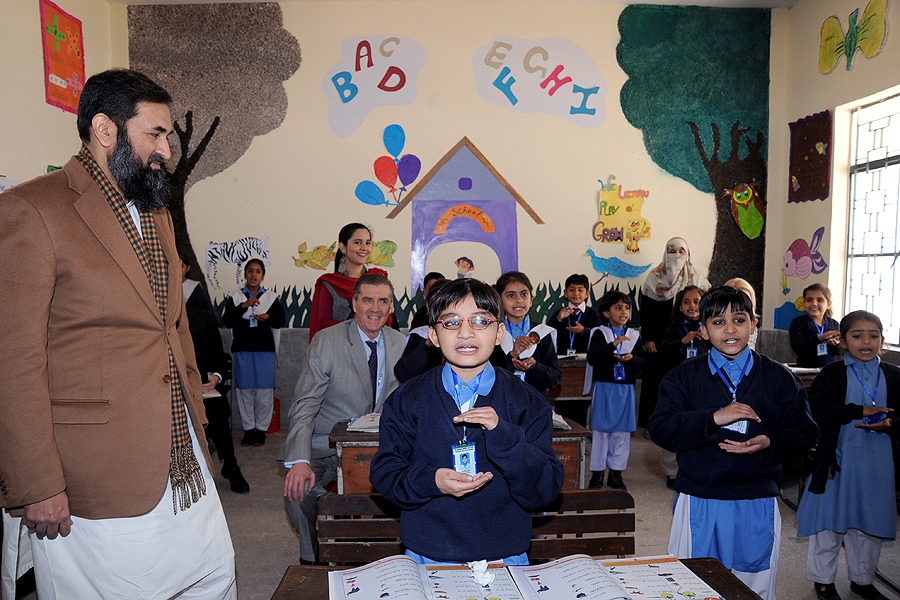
United States and Pakistan Launch the Pakistan Reading Project